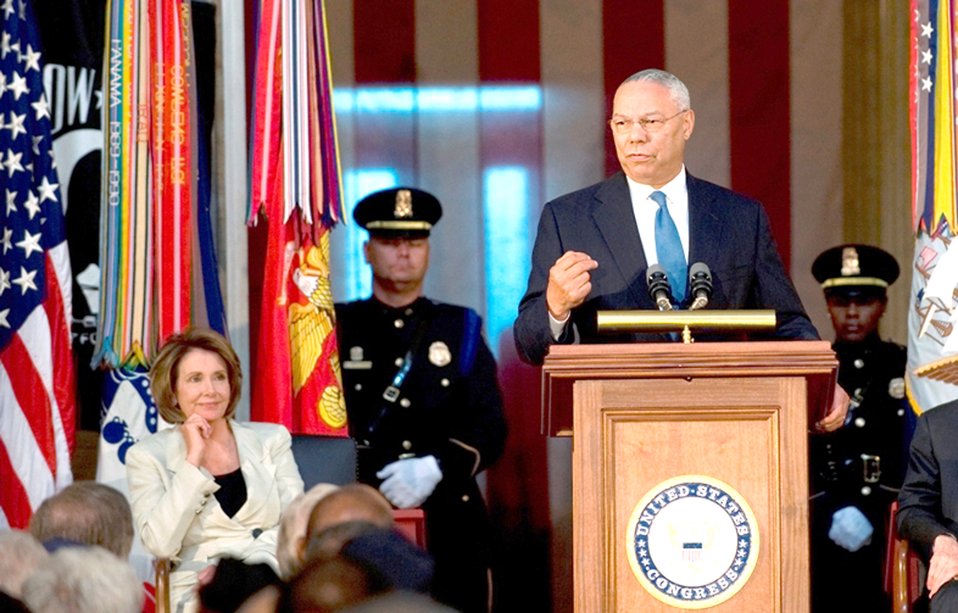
Air Force observes integration's 60th anniversary

Gen. Colin Powell, former secretary of state and the 12th chairman of the Joint Chiefs of Staff, addresses the audience at the 60th anniversary of the integration of the armed forces in the Capitol Rotunda, Washington, D.C., July 23.